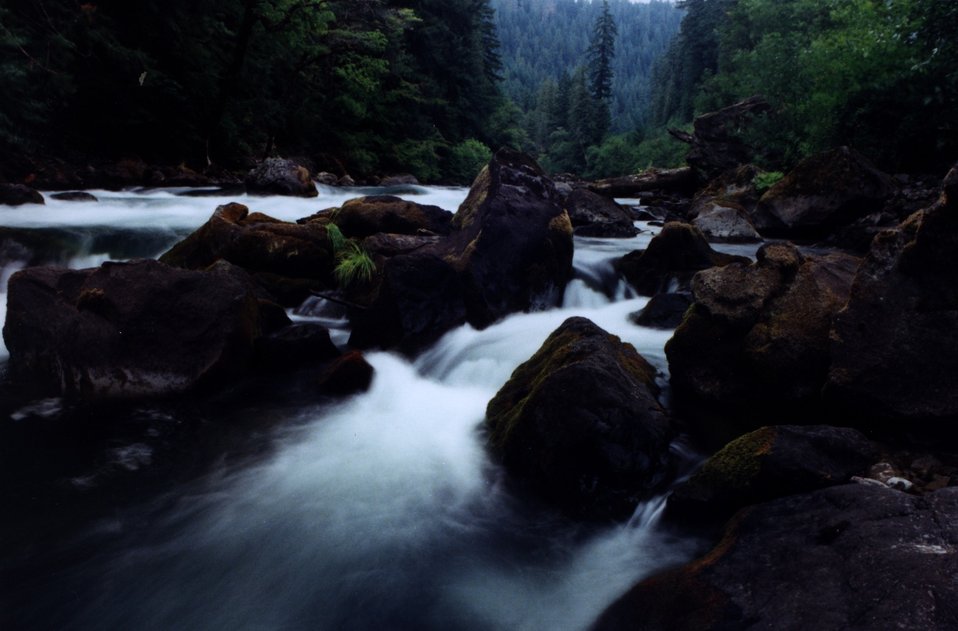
North Umpqua River near Eagle Rock.